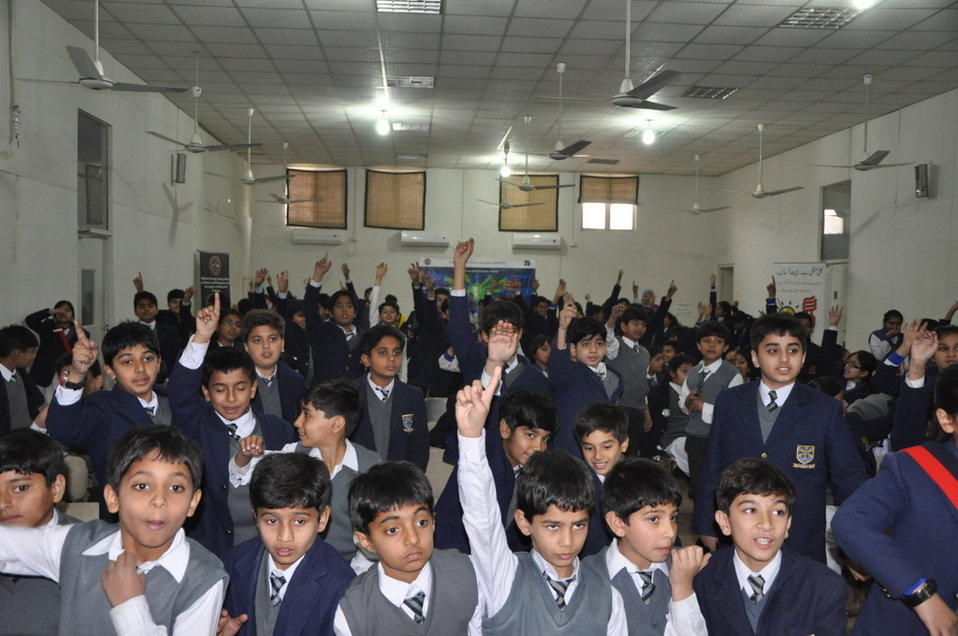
USAID Power Distribution Program-Energy Conservation Seminar Beaconhouse School System, Multan

Multan, January 21, 2013 - the USAID Power Distribution Program with the collaboration of MEPCO, held an Energy Conservation Seminar Beaconhouse School System, Multan
The purpose of the seminar was to:
• Inform students about the USAID Power Distribution Program and the role of Distribution companies in Pakistan.
• Educate students and teachers about the effective energy saving methods they can apply at homes, schools and workplaces.
More than 1000 students along with principal & teachers attended the seminar & participated actively in the quiz session. For the better know how of the students regarding MEPCO & energy sector of Pakistan, a documentary was played during the seminar